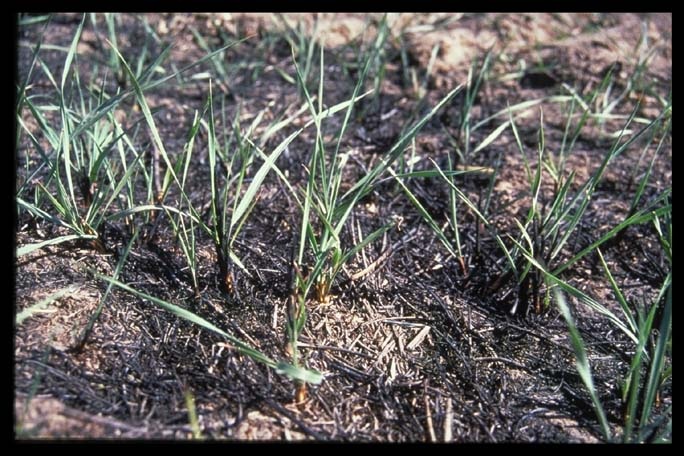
Regrowth